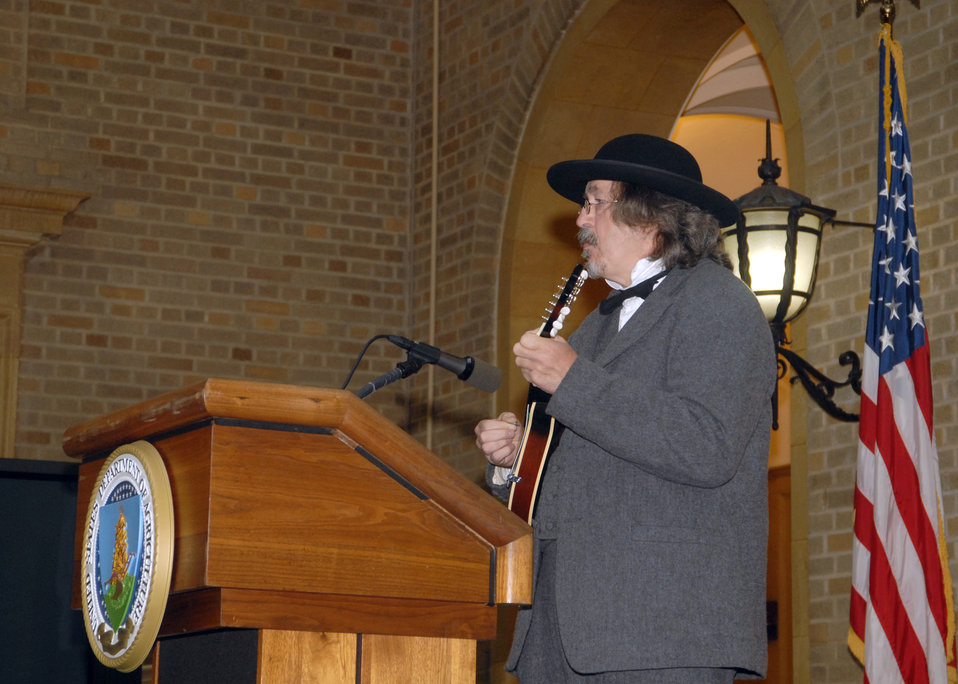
A U.S. Department of Agriculture (USDA) employee John Vranasings at USDA’s opening ceremony for the 2012 Combined Federal Campaign on Tuesday, Sept. 18, 2012 at the USDA Whitten Building, in Washington, D.C. USDA has set a goal of raising just under $2 million from their employees in the national capital area. The theme for this year’s CFC campaign is 'Choose Hope'.